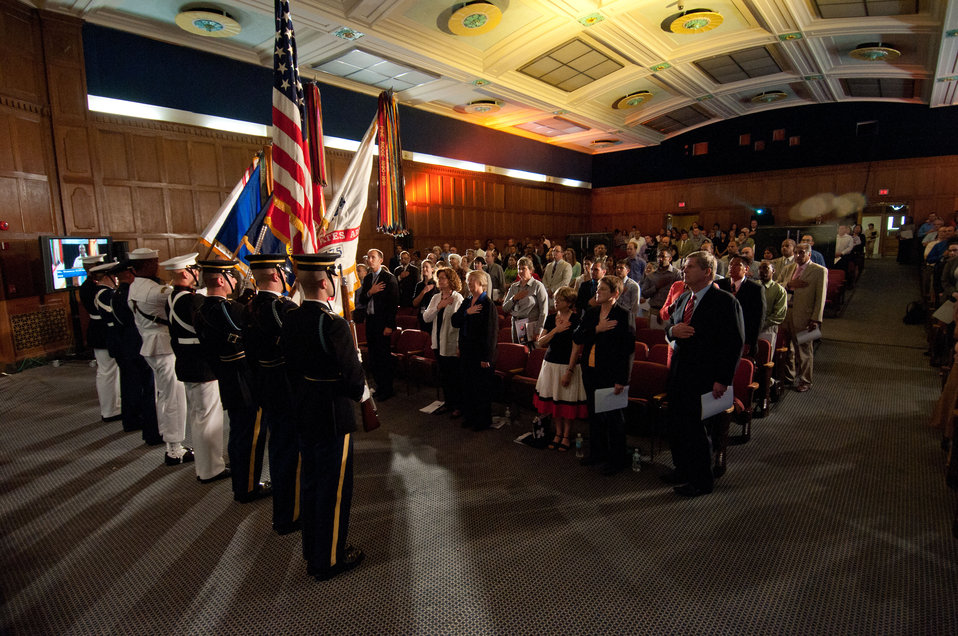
The Joint Armed Forces Color Guard from Military District of Washington presented the colors during the U.S. Department of Agriculture (USDA) Lesbian, Gay, Bisexual and Transgender (LGBT) Pride Observance Program on Thursday, June 2, 2011 in the Jefferson Auditorium, Washington, DC.